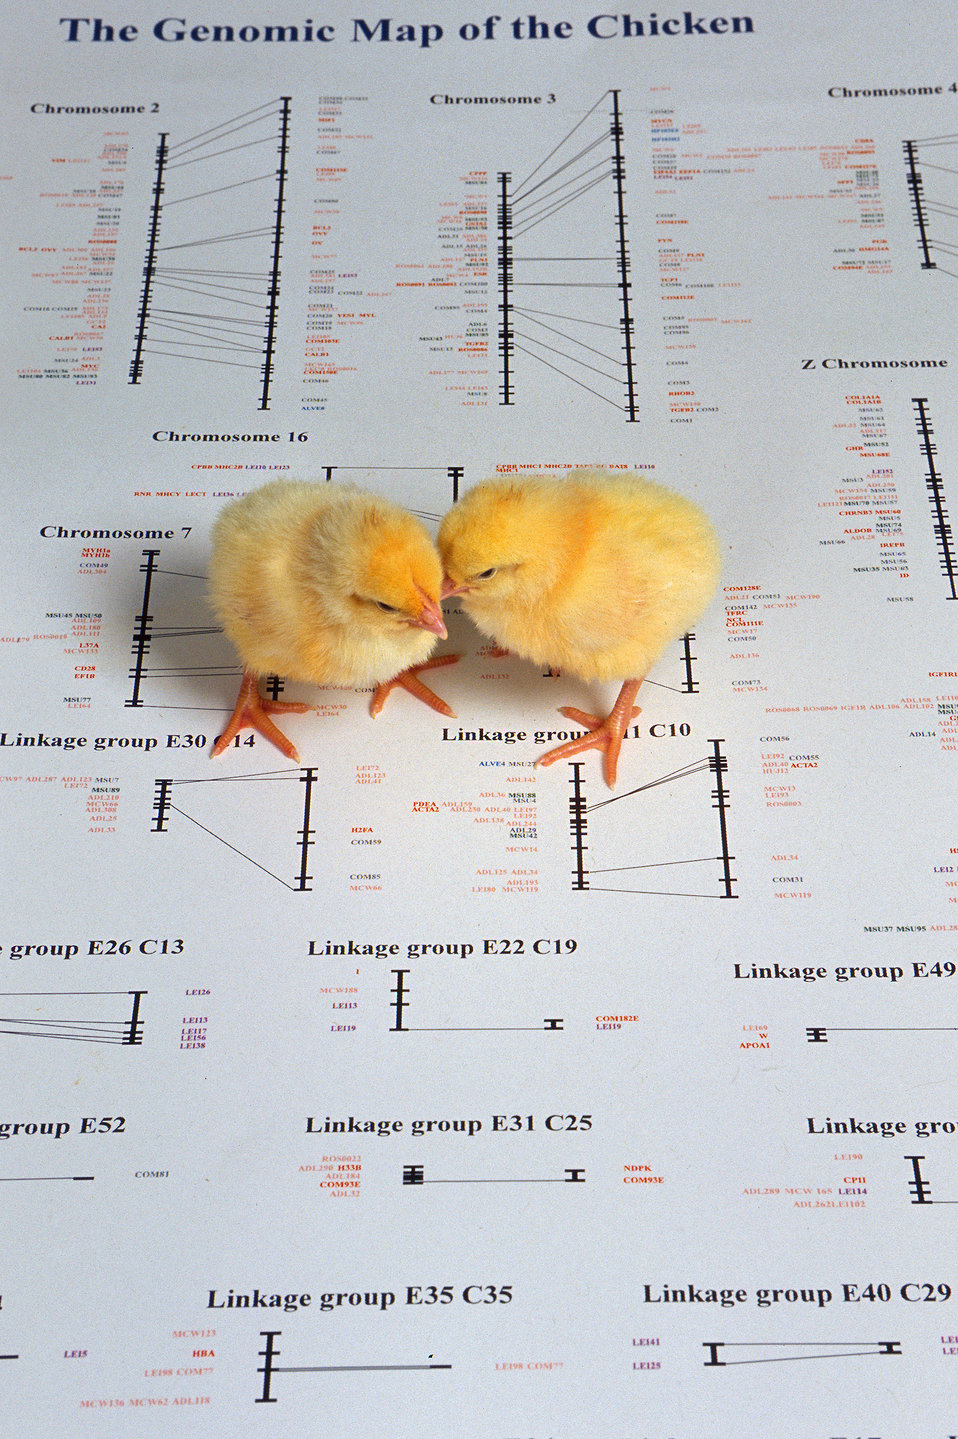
Chicks stand atop a picture of a genetic map of a chicken. The chicken genome has 39 pairs of chromosomes, whereas the human genome contains 23 pairs.